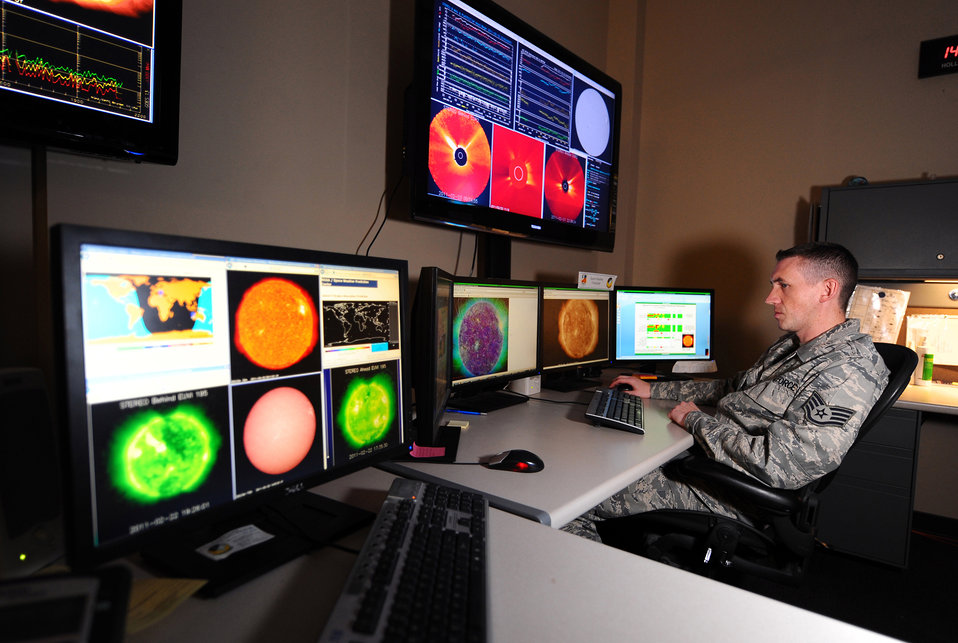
Space weather team readies for upcoming solar max

Staff Sgt. Matthew Money monitors the near earth space environment at the 2nd Weather Squadron's space weather operations center located inside the Air Force Weather Agency at Offutt Air Force Base, Neb. The sun's last solar maximum occurred in 2000 and therefore it is expected to awaken from its current solar minimum and get more and more active this year. Sergeant Money is a forecaster with the 2nd WS space weather flight.